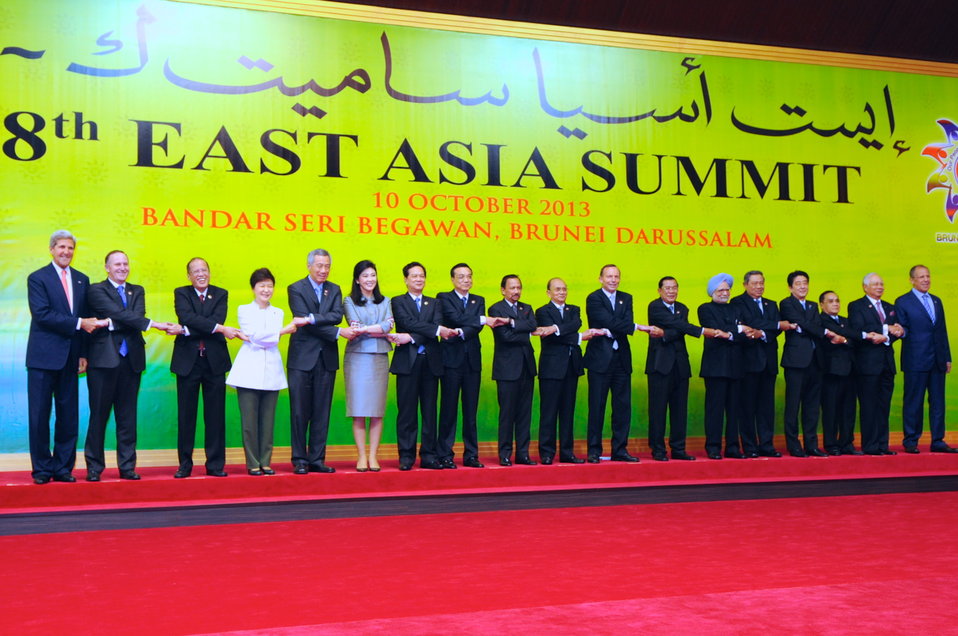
Secretary Kerry Poses With Other Attendees of East Asia Summit

U.S. Secretary of State John Kerry, far left, joins leaders of Southweast Asian countries for a group photo before the East Asia Summit in Bandar Seri Begawan, Brunei, on October 10, 2013.